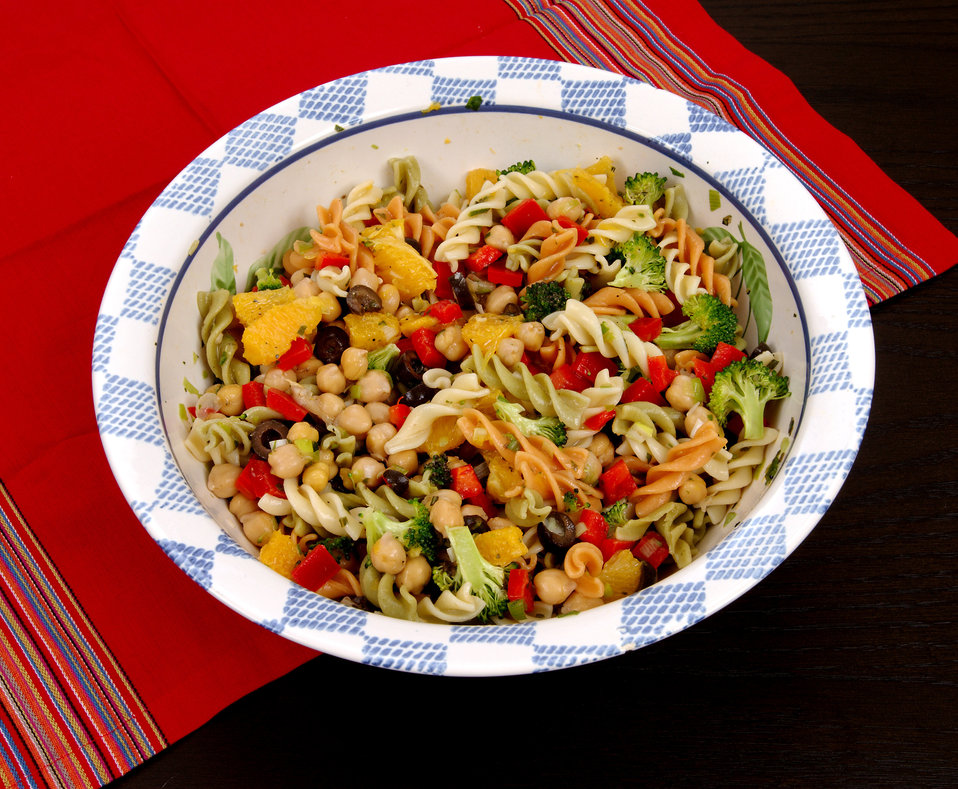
This photograph depicts a bowl of Chickpea Pasta Salad with Oranges. Comprised of the following ingredients: multicolored corkscrew pasta, orange segments, chickpeas, broccoli, black olives, green onion, red bell pepper, red wine vinegar, orange juice, canola oil, basil, oregano, rosemary, garlic, and black pepper, the recipe may be seen using the link below. Nutrient-dense, this flavorful pasta salad packs a terrific nutritious punch, and is a great choice as a lunch, or side dish.